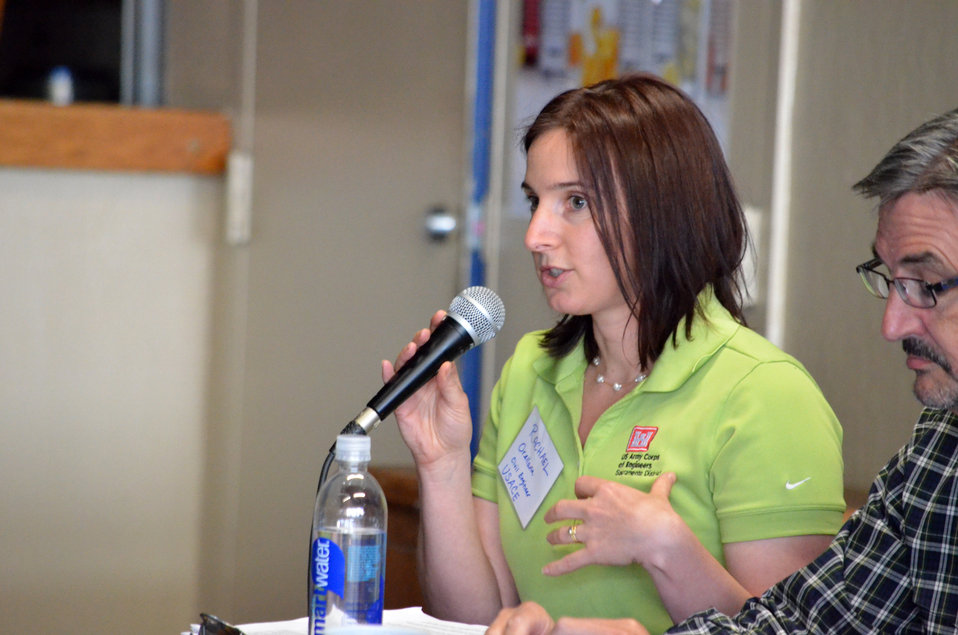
Corps participates in levee vegetation discussion

Rachael Orellana, a civil engineer with the U.S. Army Corps of Engineers Sacramento District, joined representatives from California’s Department of Water Resources and other engineering agencies May 15, 2014 on a levee vegetation panel in Lodi, Calif. The Water Education Foundation’s two-day flood management tour offers a firsthand look at water facilities, levees and rivers, and provides discussion on a range of topics, such as vegetation on levees, that impact how agencies operate and maintain flood risk reduction features.